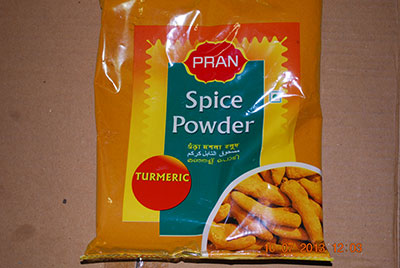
RECALLED - Powder turmeric

October 17, 2013 – Product Recall – Fahman Enterprises Inc. - Recalls Pran Brand Turmeric Powder Due to Elevated Levels of Lead.